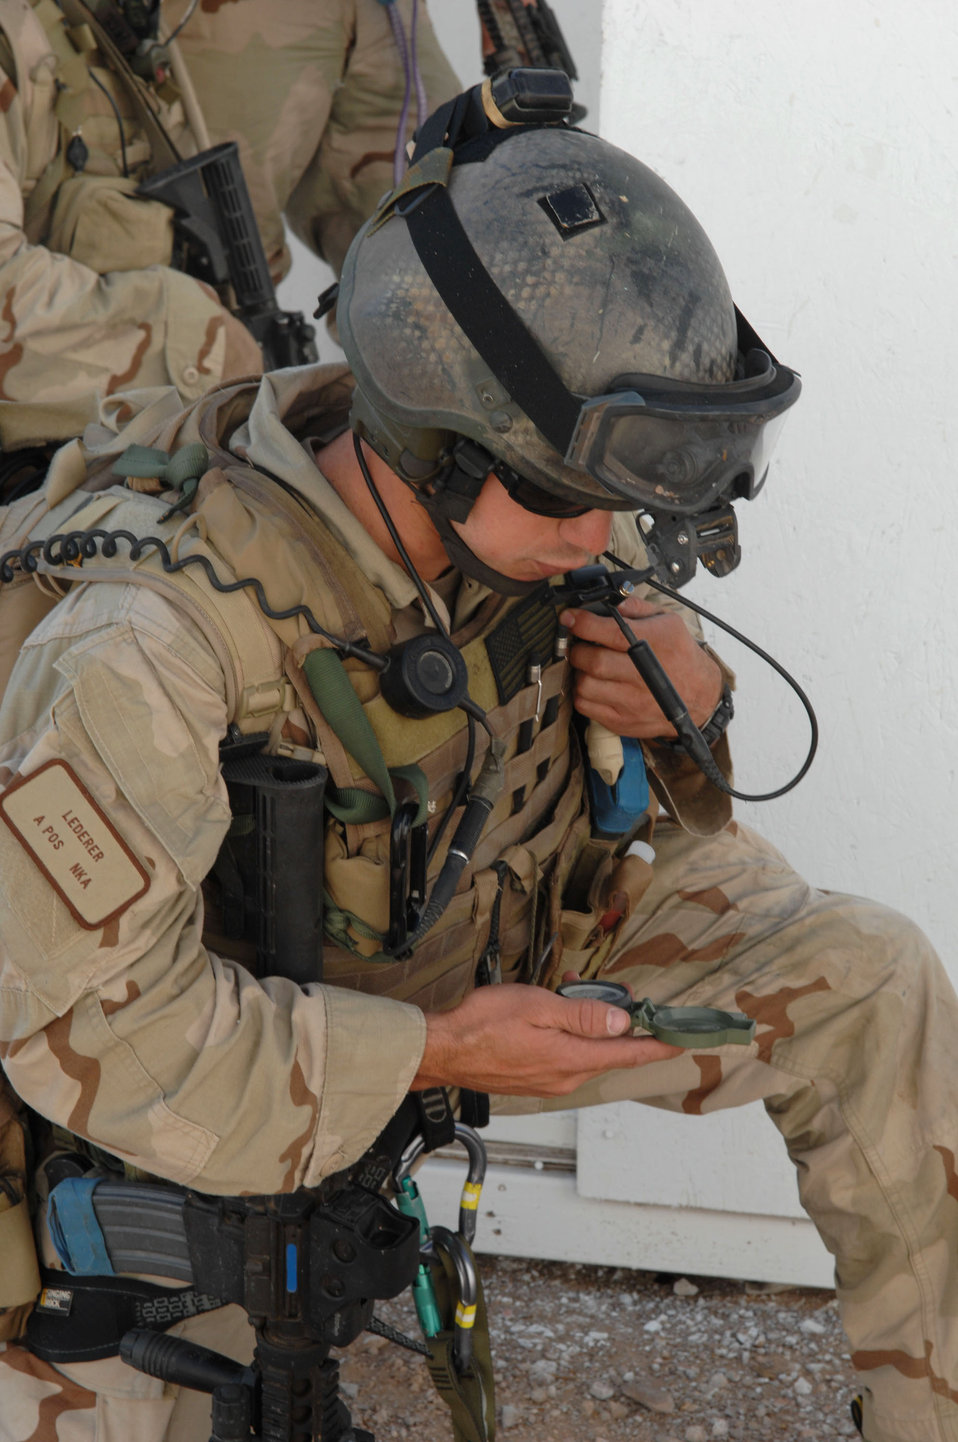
Angels bring thunder

Capt. Eric Lederer relays information for a call for fire as his fellow rescueman provides cover during Exercise Angel Thunder July 16 at Gila Bend, Ariz. Captain Lederer is a 48th Rescue Squadron combat pararescue officer from Davis-Monthan Air Force Base, Ariz. The exercise is designed to provide realistic combat search and rescue training for Airmen in combat rescue forces.